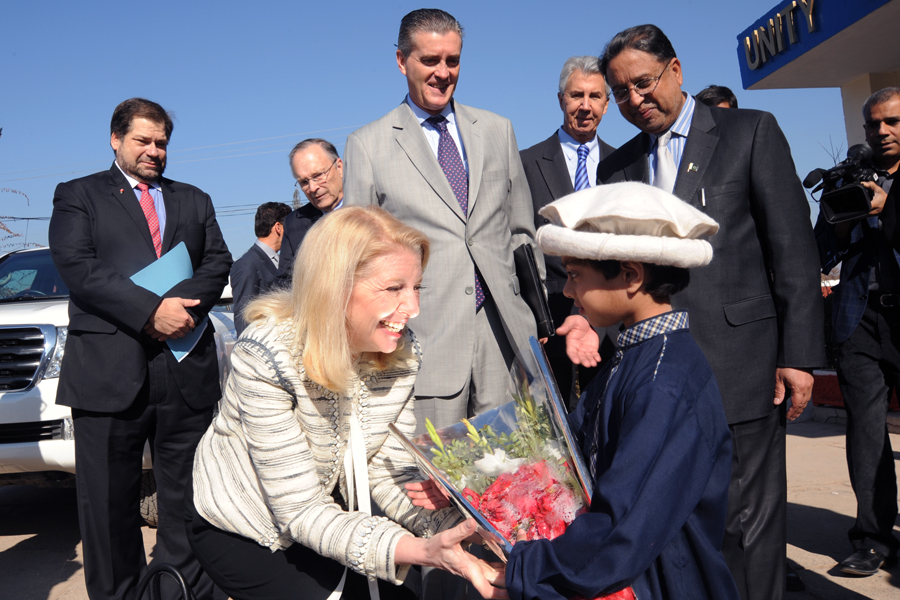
United States and Pakistan Launch the Pakistan Reading Project